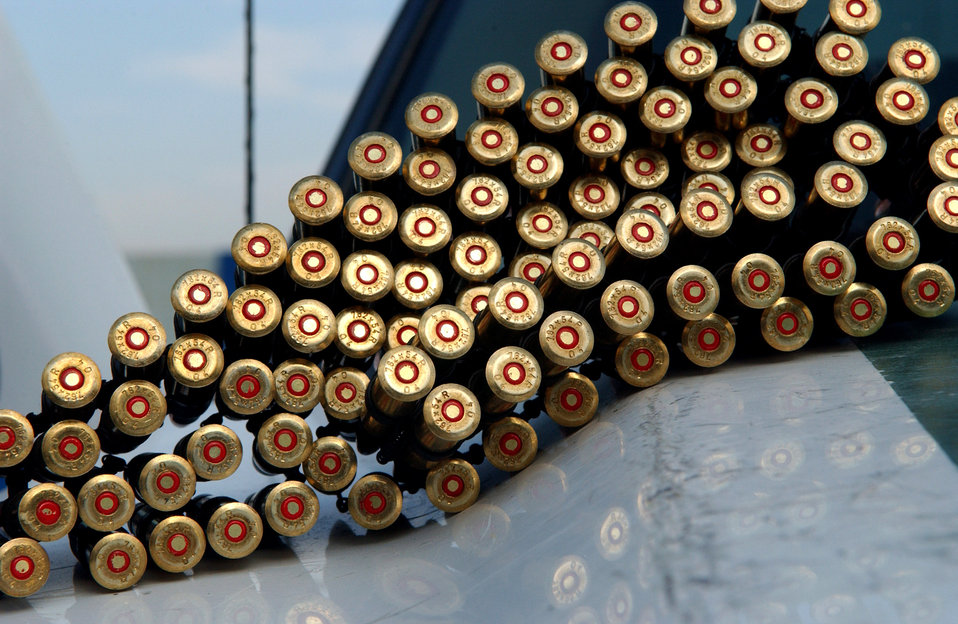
Street patrol

Prior to a patrol through the streets of Baghdad, Iraq, 7.62 rounds are ready to be loaded at the Hy Al-Amil station Nov. 23. Detachment 7, 732nd Expeditionary Security Forces Squadron Airmen assist Iraqi police in achieving self-sufficiency.